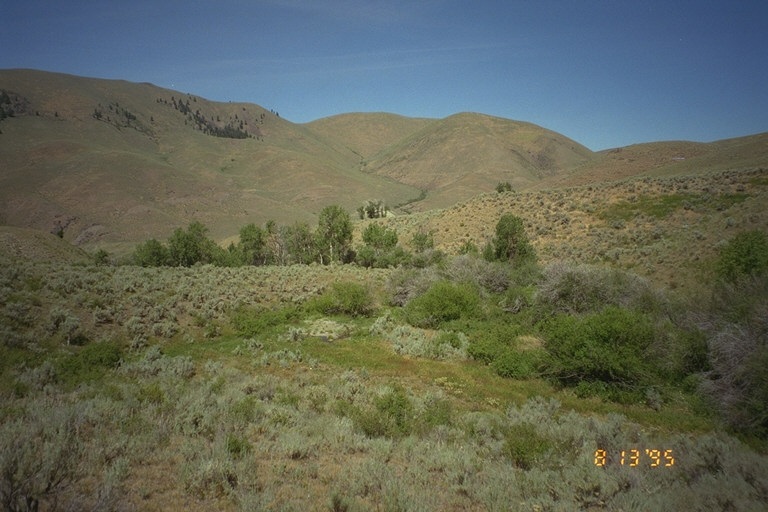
Riparian area Public Lands Salmon Field Office UCSC Upper Columbia Salmon Clearwater District